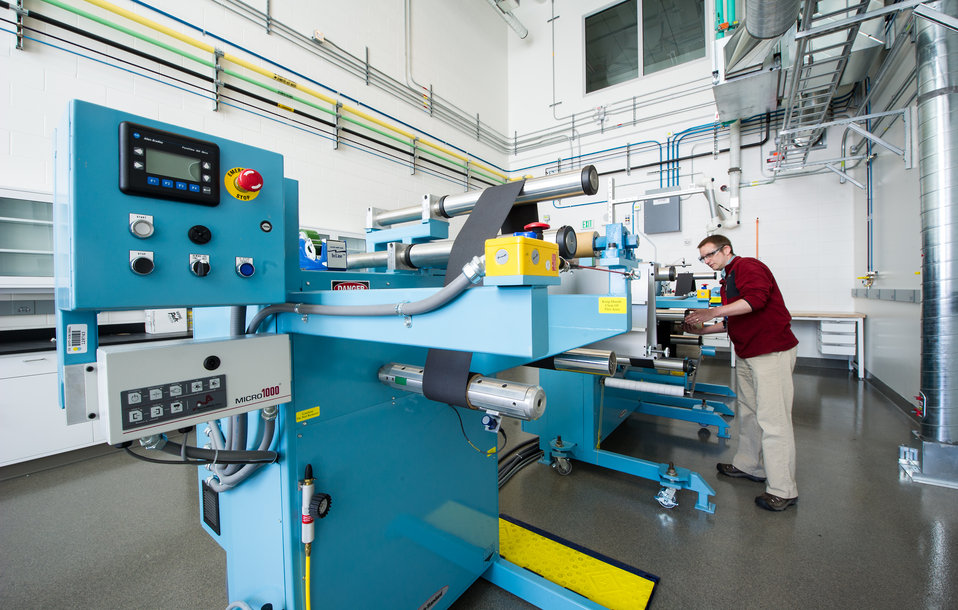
Energy Systems Integration Facility (ESIF), research web line, hydrogen lab

May 02, 2013 - NREL researcher Guido Bender works on setting up the research web line in the hydrogen materials lab at the new Energy Systems Integration Facility (ESIF) at the National Renewable Energy Laboratory in Golden, Colorado.